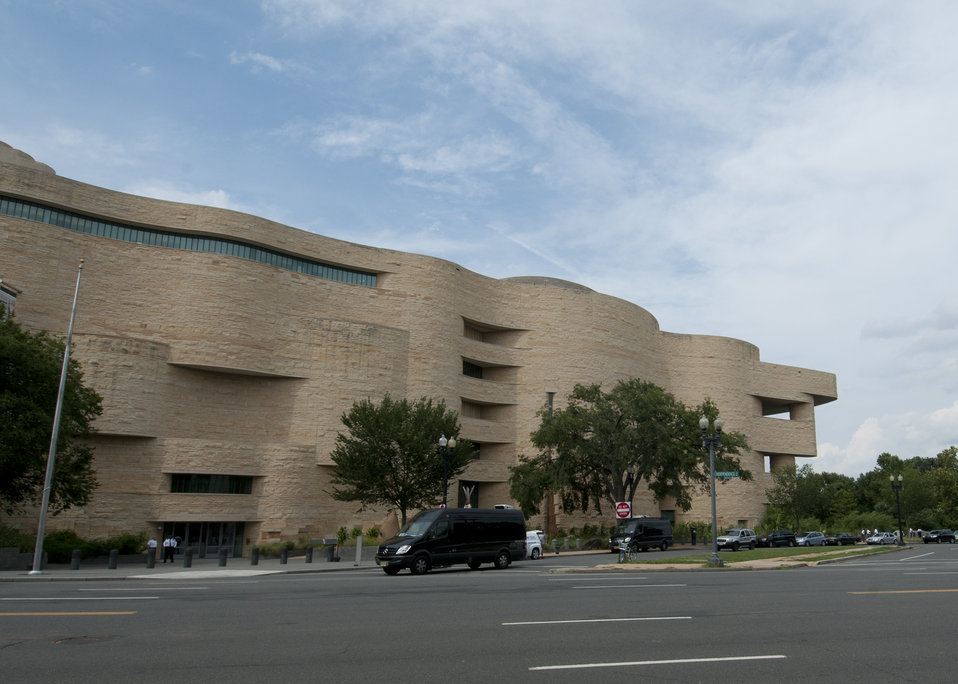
The National Museum of the American Indian operates under the auspices of the Smithsonian Institution on the National Mall in Washington, D.C. The museum is dedicated to the life, languages, literature, history, and arts of the Native Americans of the Western Hemisphere.